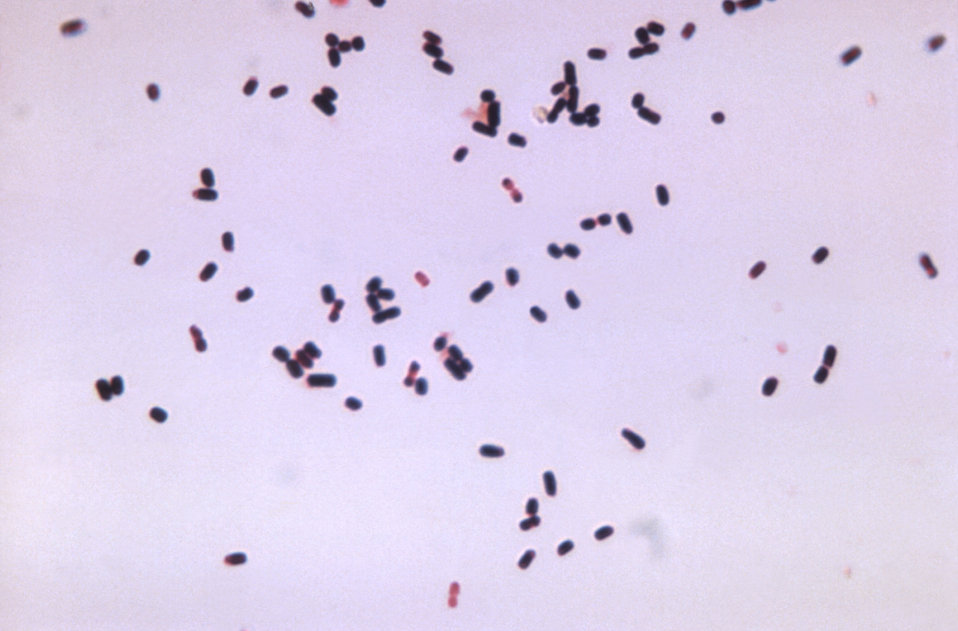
Magnified 956X, this Gram-stained photomicrograph depicted numbers of the Gram-positive Clostridium perfringens, formerly C. welchii, type A bacteria, which had been cultivated in chopped meat medium, over a time period of 24 hours.